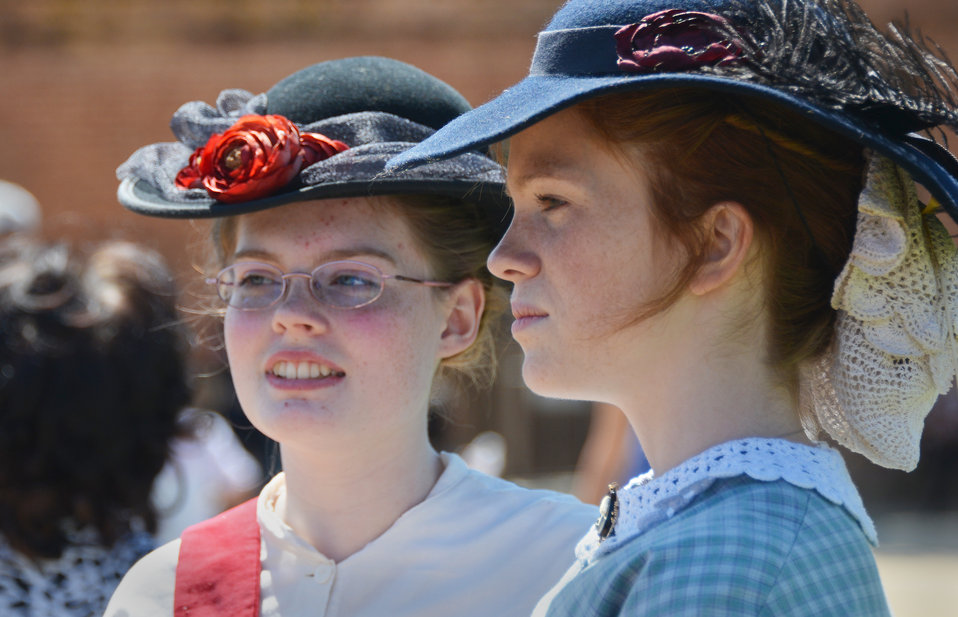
Historic weekend in Knights Ferry

Two young ladies in costumes of the 1800s take part in a day of Civil War reenactment at Knights Ferry at the U.S. Army Corps of Engineers Sacramento District’s Stanislaus River Parks in Knights Ferry, Calif., March 22, 2014.